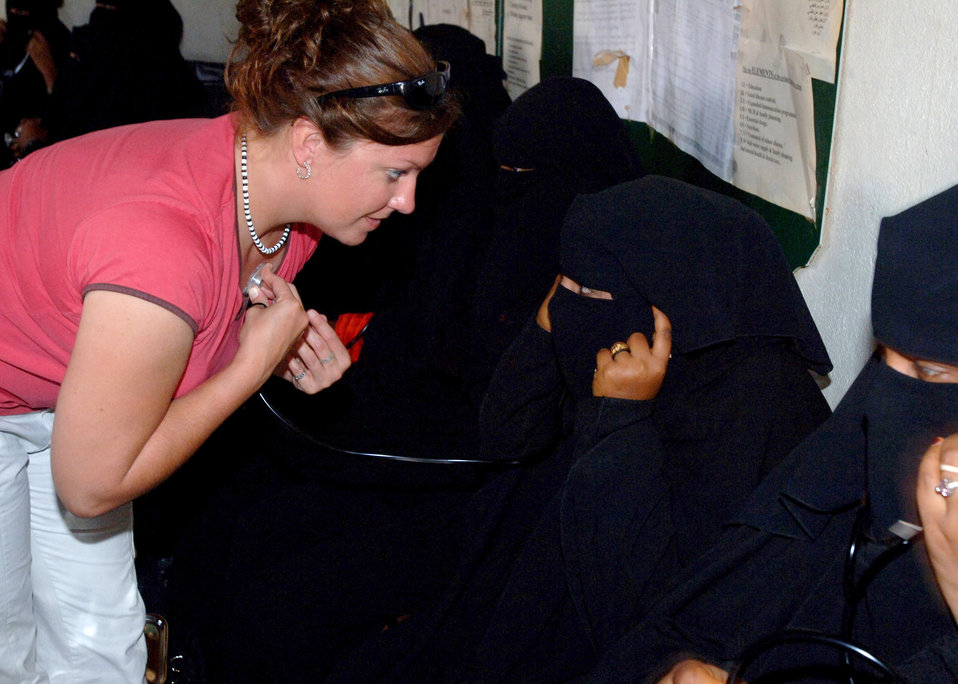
Veterinary project has big impact on small island

Army Staff Sgt. Jennifer A. Brooks, a civil affairs specialist, explains how to use a stethoscope as part of a Combined Joint Task Force-Horn of Africa veterinary civic action project on the small island of Socotra, Yemen. The objective of the project is to teach women on the island basic animal husbandry techniques. Those learned skills will be used to improve the country's overall livestock health and productivity, as well as educate others villagers.